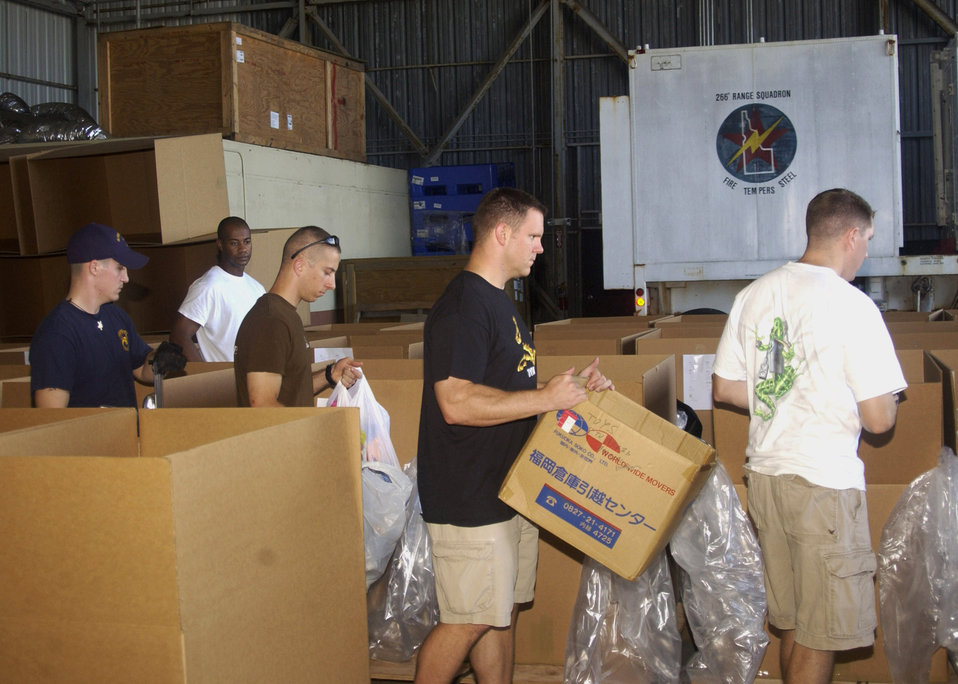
Operation Christmas Drop box build-up complete in Guam

Volunteers pack boxes for the 2007 Operation Christmas Drop Dec. 8 at Andersen Air Force Base, Guam. This will be the 55th year of Operation Christmas Drop. Andersen AFB members are scheduled to make 74 drops over 71 islands, culminating in the largest Operation Christmas Drop in the history of the base's effort to spread holiday cheer to people living in islands close to Guam.